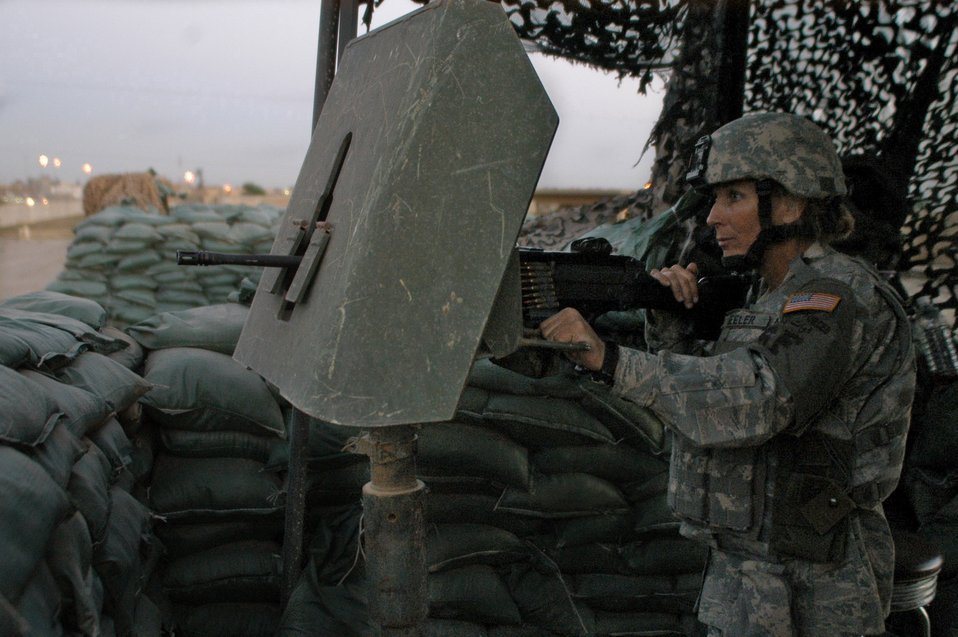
Deployed defenders show AF mission is more than just aircraft

Tech. Sgt. Kelly Beeler, 506th Expeditionary Security Forces Squadron at Kirkuk Regional Air Base, Iraq, stands post in one of the base's many guard towers. While typical perceptions associated with the Air Force in combat might involve aircraft dropping bombs on targets, the several hundred security forces Airmen deployed here are proving these stereotypes outdated.